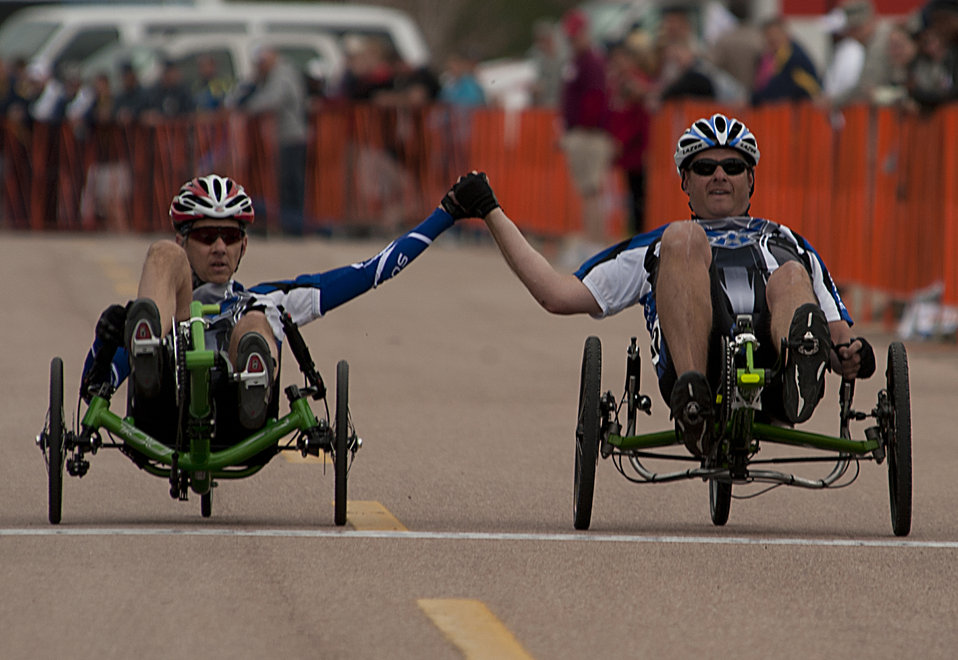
Warrior Games

U.S. Air Force Senior Master Sgt. Mike Sanders, left, and Maj. Scott Bullis hold hands as they cross the finish line as they take part in the recumbent cycling event of Warrior Games 2012 at the U.S. Air Force Academy in Colorado Springs, Colo., May 1, 2012.